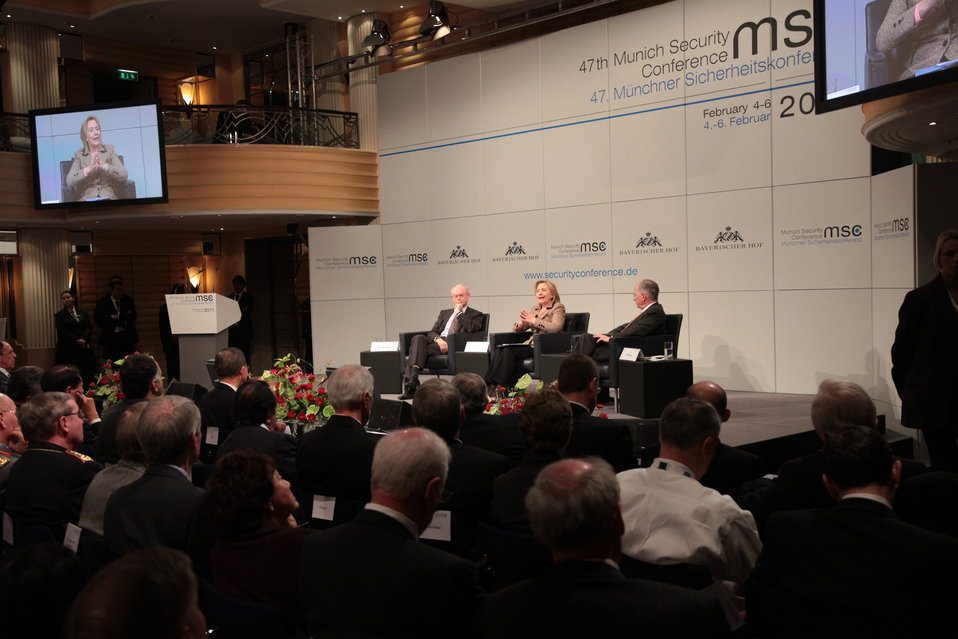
Secretary Clinton Responds to Questions

U.S. Secretary of State Hillary Rodham Clinton responds to questions during a Q and A session after delivering remarks at the Munich Security Conference in Munich, Germany, on February 5, 2011.